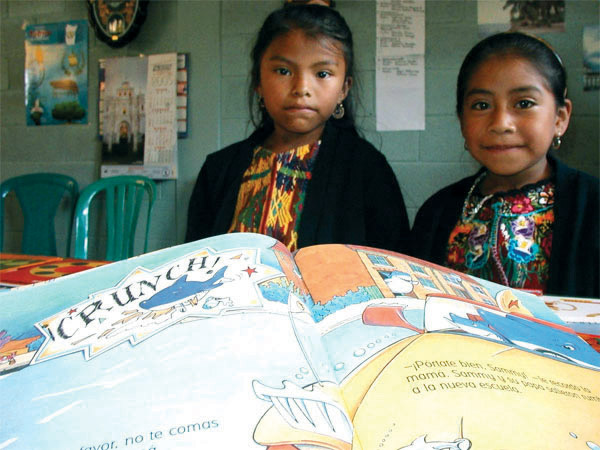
Dover Airmen deliver humanitarian supplies to Guatemala

Guatemalan girls look at their new school books provided through humanitarian assistance through the U.S. Agency for International Development and delivered Dec. 5 by Airmen from Dover Air Force Base, Del. Members of the 709th Airlift Squadron here flew a C-5 Galaxy delivering 64,000 pounds of supplies to the Guatemala City International Airport to assist a Guatemalan grade school and orphanage about five hours away from the airport. The humanitarian mission was part of the Denton Program, a Department of Defense humanitarian assistance transportation program that uses space available military air, surface and sea-lift assets. The program is jointly administered by the Department of State, Defense Department and U.S. Agency for International Development.